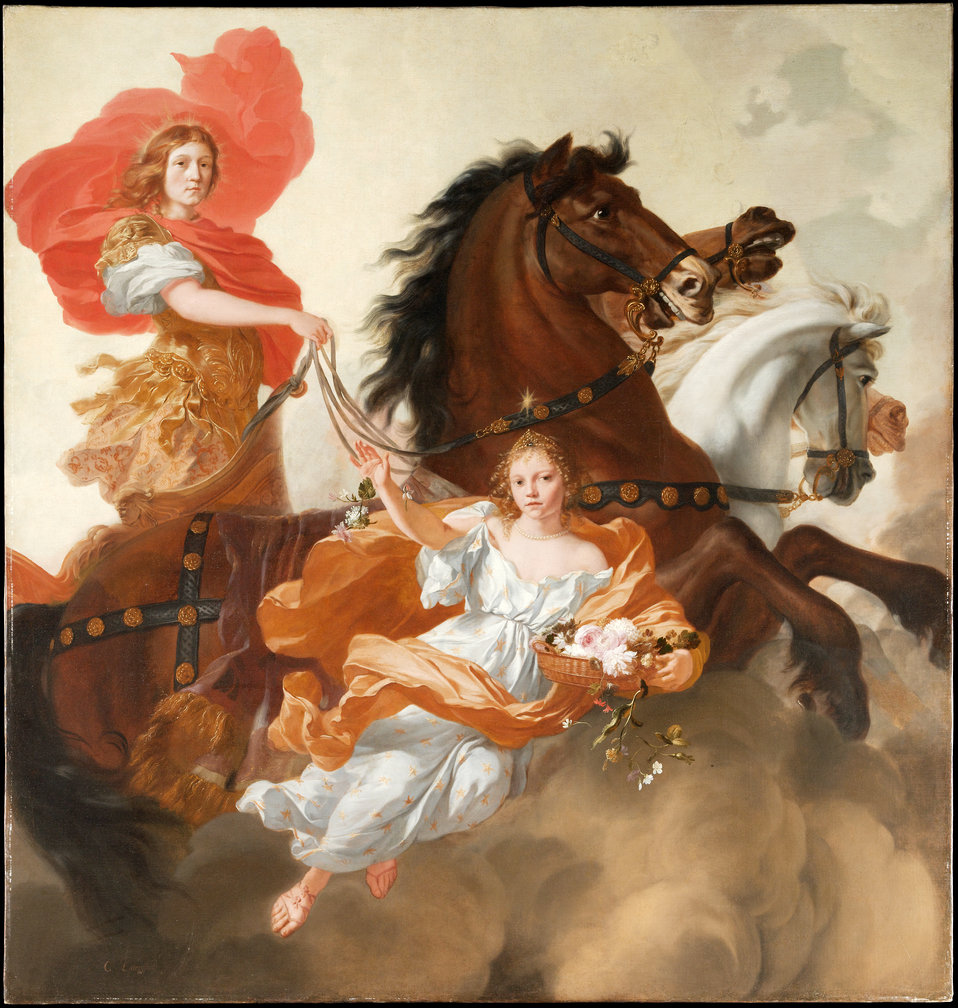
1671 Gérard de Lairesse - Apollo and Aurora